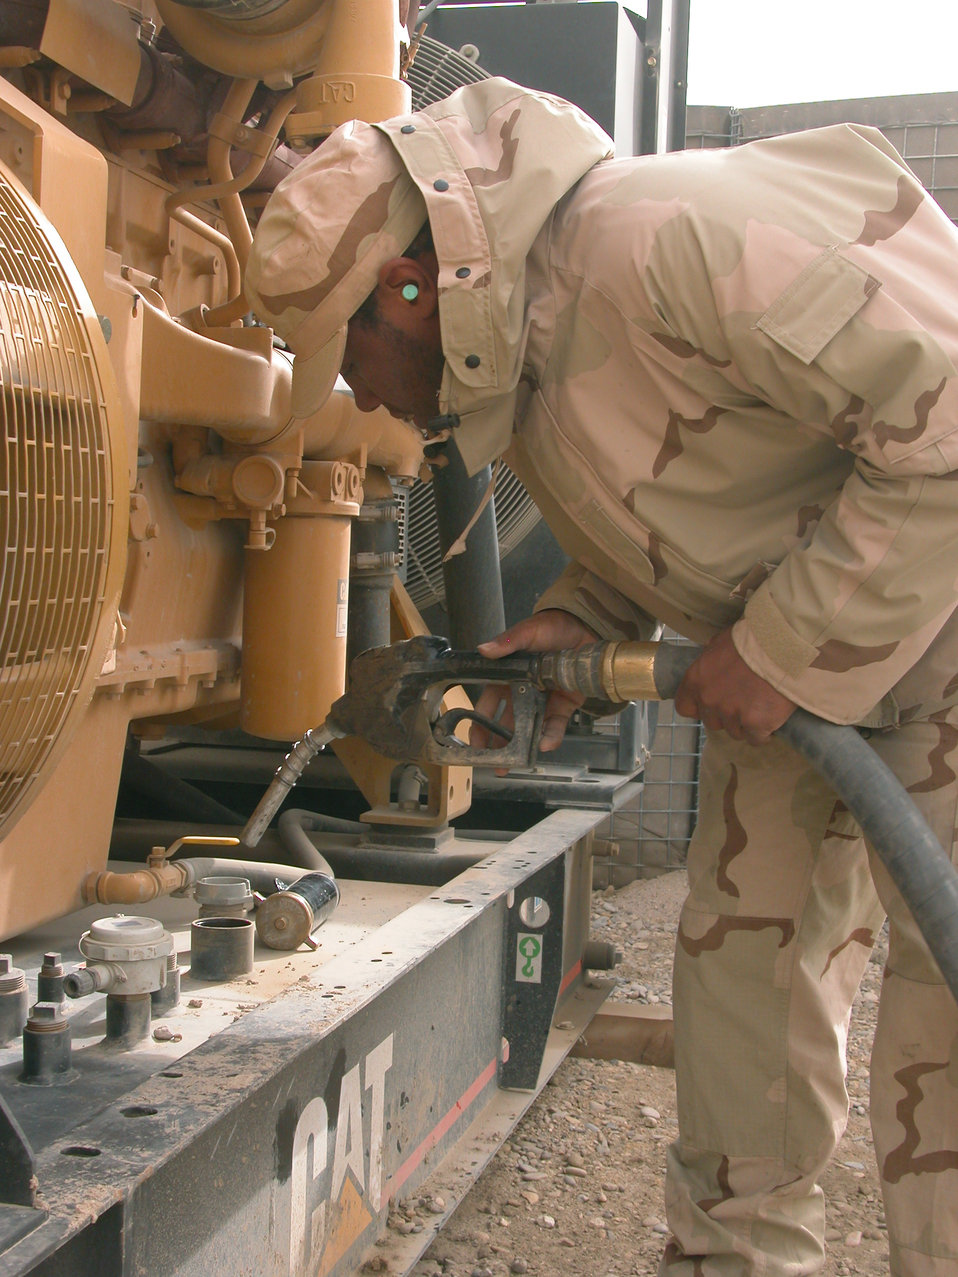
OIF

TALLIL AIR BASE, Iraq (AFPN) -- Senior Airman Romanuel Carter prepares to fill a generator with diesel fuel. The 407th Expeditionary Logistics Readiness Squadron's fuels flight delivers to 42 routine fill points daily. Airman Carter is a fuels distribution operator deployed here from Kadena Air Base, Japan.